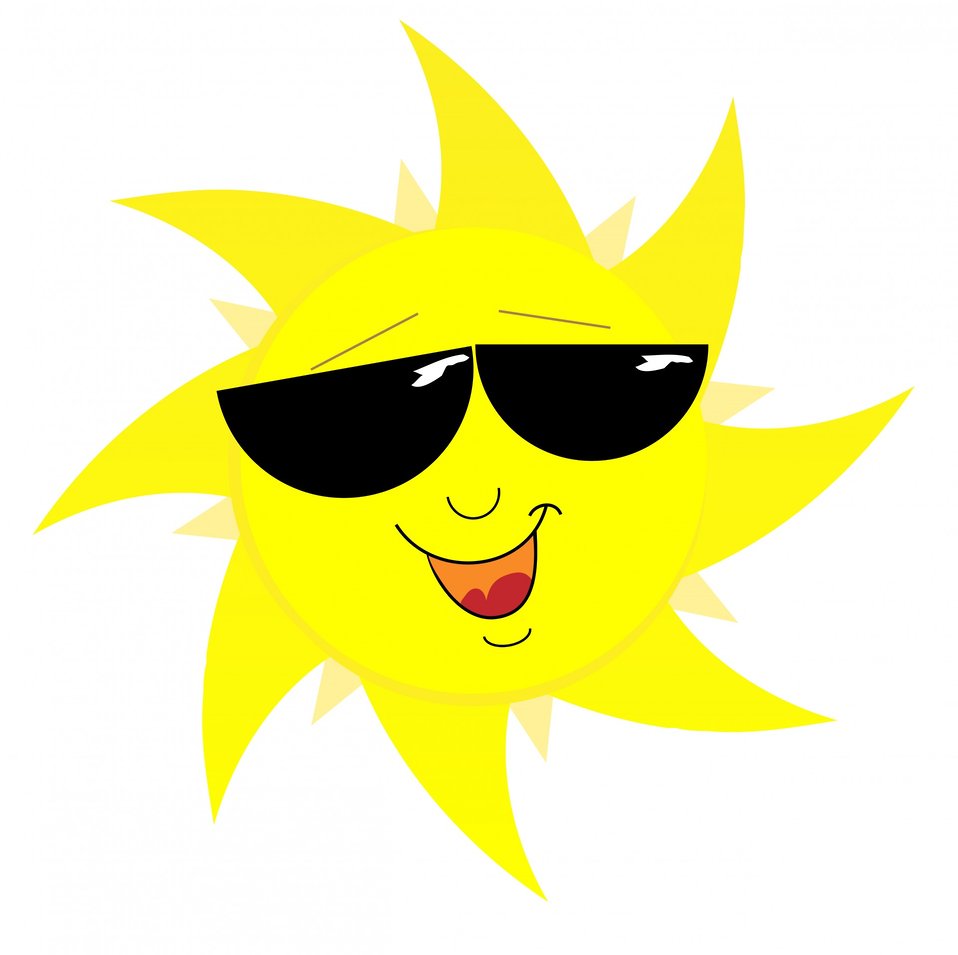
Smiling sun face in sunglasses

Happy smiling sun face cartoon wearing sunglasses clipart for scrapbooking.